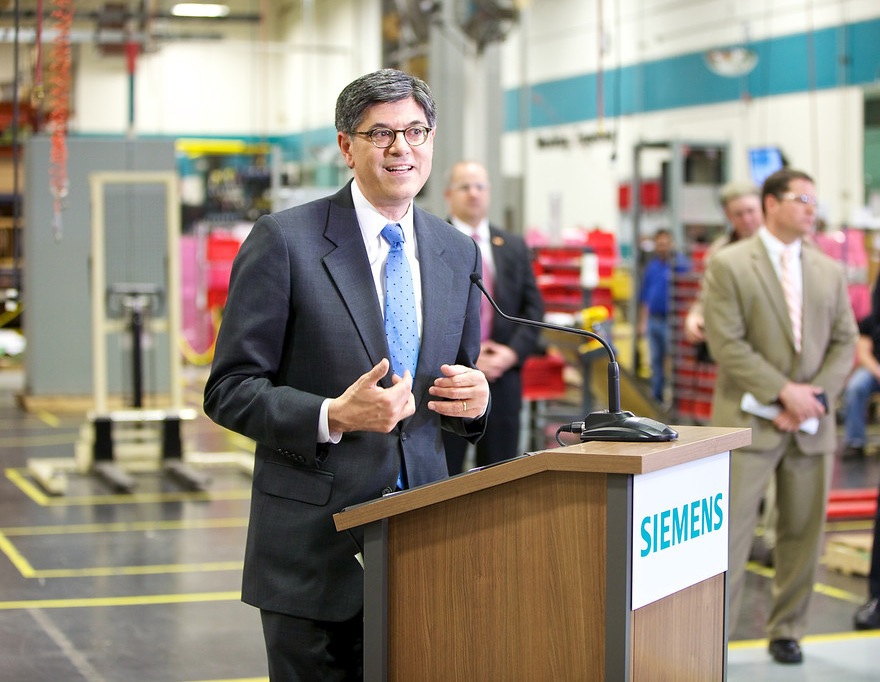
Secretary Lew visits Atlanta during first official trip

In this photo, Secretary Lew answers questions from the media at a press conference during his visit to Siemens manufacturing plant in Alpharetta, Georgia